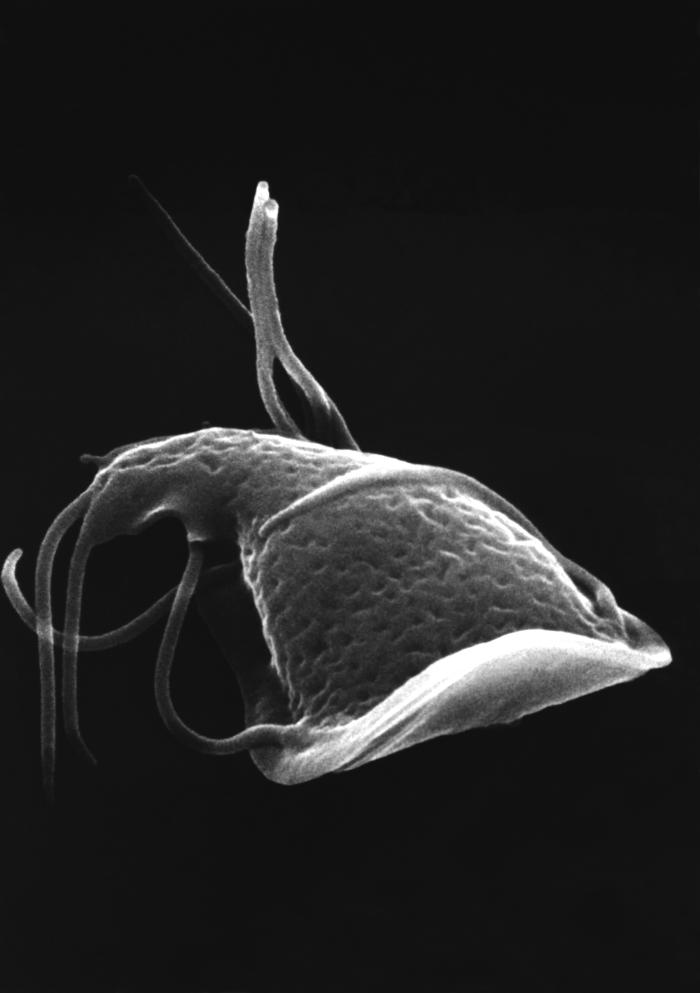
This scanning electron micrograph (SEM) depicted the dorsal (upper) surface of the intestinal protozoan, Giardia. Some of the identifying morphologic characteristics include pairs of thread-like flagella that facilitate motility, and a ventolateral flange that appears as a 'ruffle' around the anterior portion of the organism.